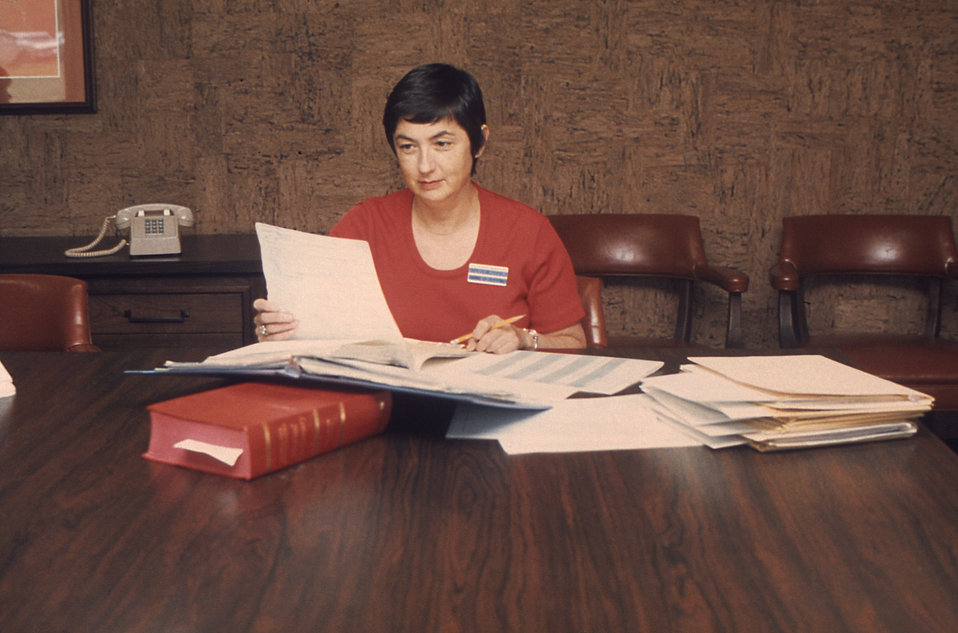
This historic image depicted a Centers for Disease Control (CDC) public health adviser working on a pilot study known as SENIC (Study on the Efficacy of Nosocomial Infection Control), which measured the accuracy of a system, designed by Robert W. Haley, M.D., that detected hospital-acquired infections through the analysis of medical records. SENIC was ultimately used to measure the change of infection rates in a random sample of U.S. hospitals. In this picture she appeared to be doing an in-line quality control analysis, by comparing the agreement of duplicate reviews of the same medical records.